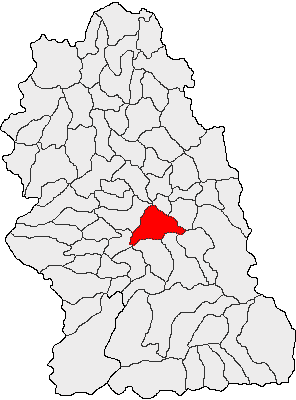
ro:Categorie:Hărţi ale judeţului Hunedoara